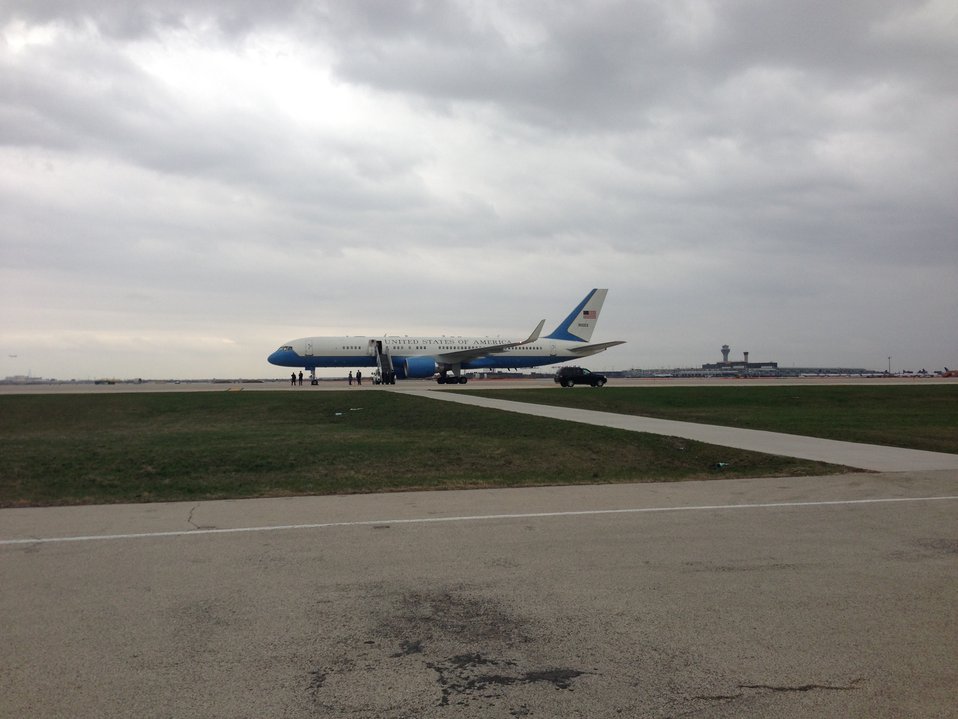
Secretary Kerry Meets With the Family of Anne Smedinghoff

U.S. Secretary of State John Kerry stops in Chicago, Illinois, to meet with the family of Anne Smedinghoff, a Foreign Service Officer killed in Afghanistan, on April 15, 2013.